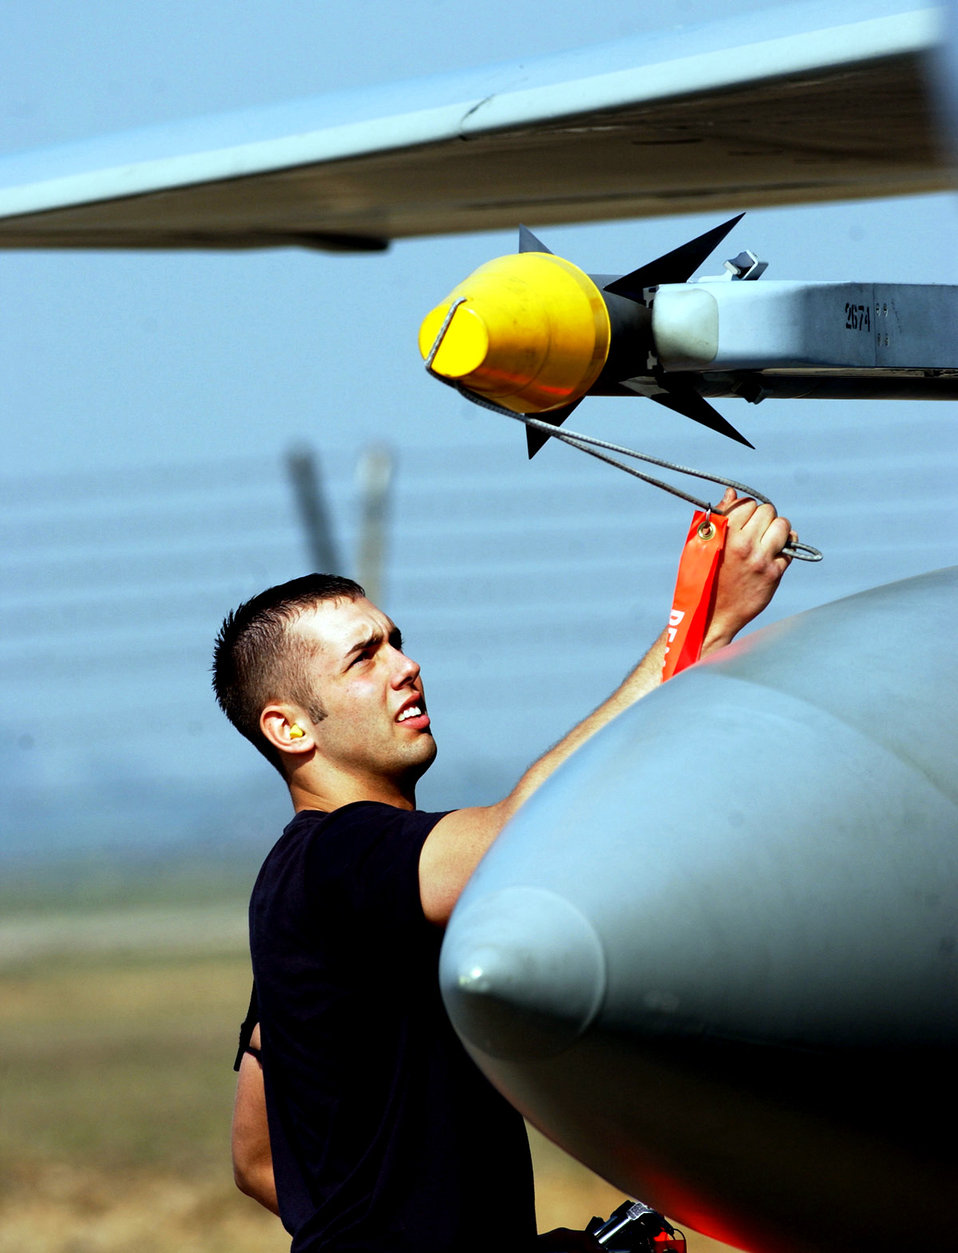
Cope India '04

GWAILOR AIR FORCE STATION, India -- Airman 1st Class AJ McGee removes the raydome cover off an AIM-9X Sidewinder on an F-15C Eagle before takeoff as Cope India '04 kicks off here. Airman McGee and about150 airmen from Elmendorf Air Force Base, Alaska, are participating in the Pacific Air Forces-sponsered excersize which runs through Feb 25.